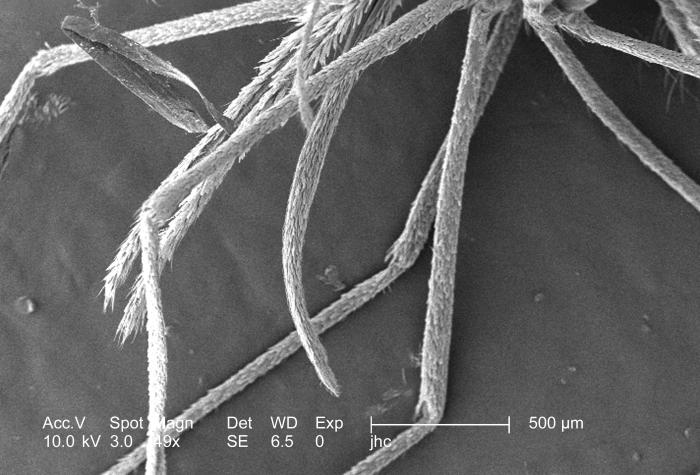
This low magnification scanning electron micrograph (SEM), enlarged only 49x, revealed some of the morphologic features displayed by an Anopheles gambiae mosquito. Included in the field of view was the curved sheath-covered proboscis, which the insect uses to penetrate the host's skin in order to obtain a blood meal; two palps, which lie to each side of the proboscis, and pick of tactile and chemical changes in its environment; and various aspects of the mosquito's six jointed legs, placing it in the Phylum of Arthropoa.